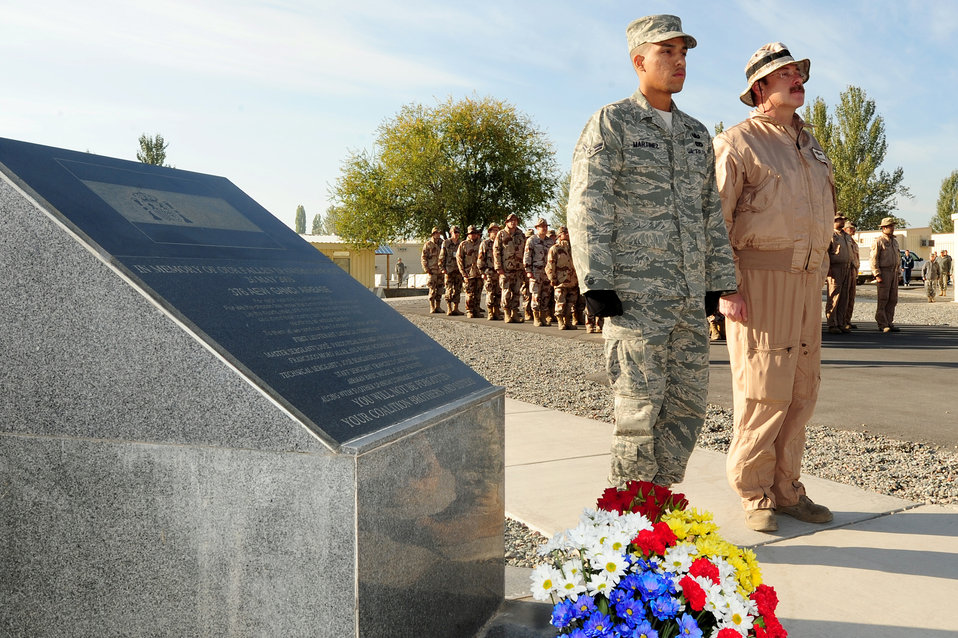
Airmen bid farewell to Spanish forces at Transit Center at Manas

Flowers are placed by U.S. and Spanish servicemembers at a memorial Oct. 13, 2009, at the Transit Center at Manas, Kyrgyzstan. Airmen came together to remember those who lost their lives in battle in support of Operation Enduring Freedom.